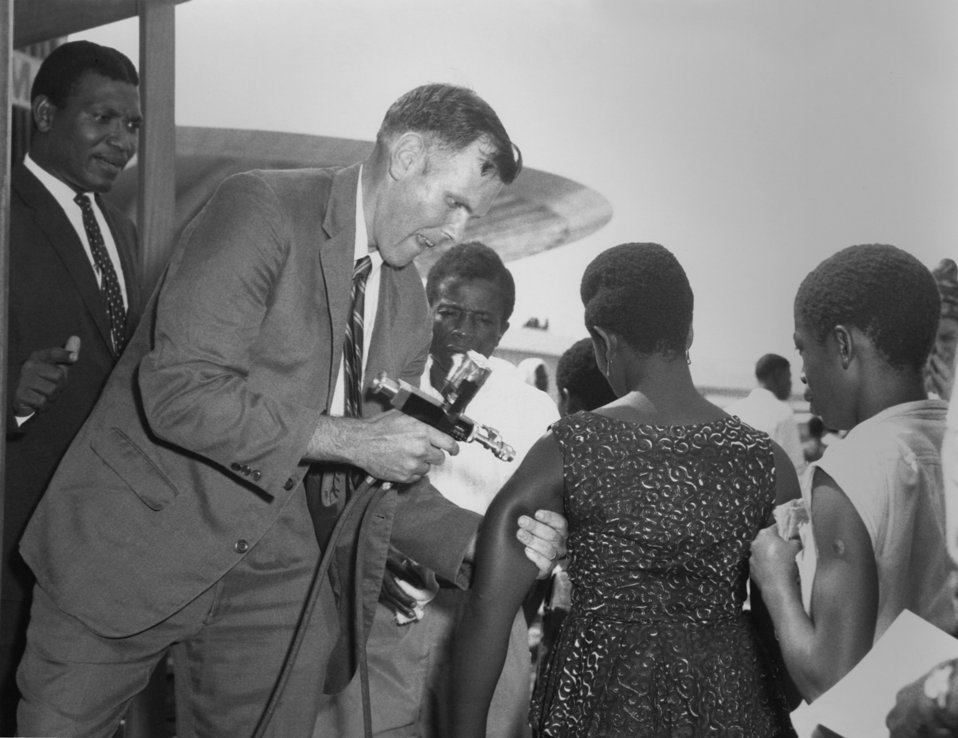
This was Dr. Stan Foster, EIS Officer, Class of 1962 (Cntr), as he administers a smallpox vaccination to a Nigerian woman, 1967.